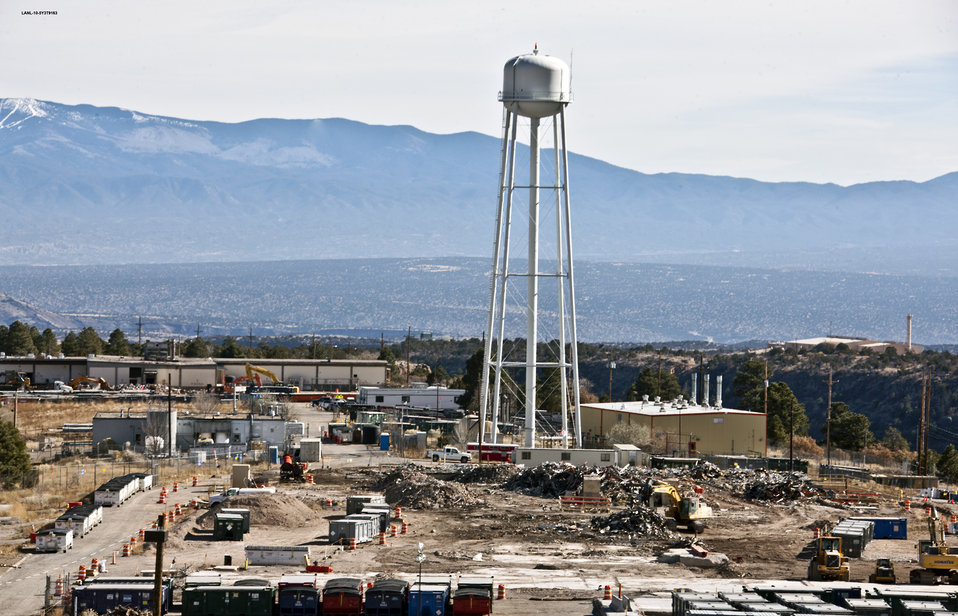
Los Alamos achievements

What was formerly Technical Area 21 is now an almost-bare mesa after Recovery Act funding demolished 24 Manhattan Project and Cold War-era buildings at Los Alamos National Laboratory.